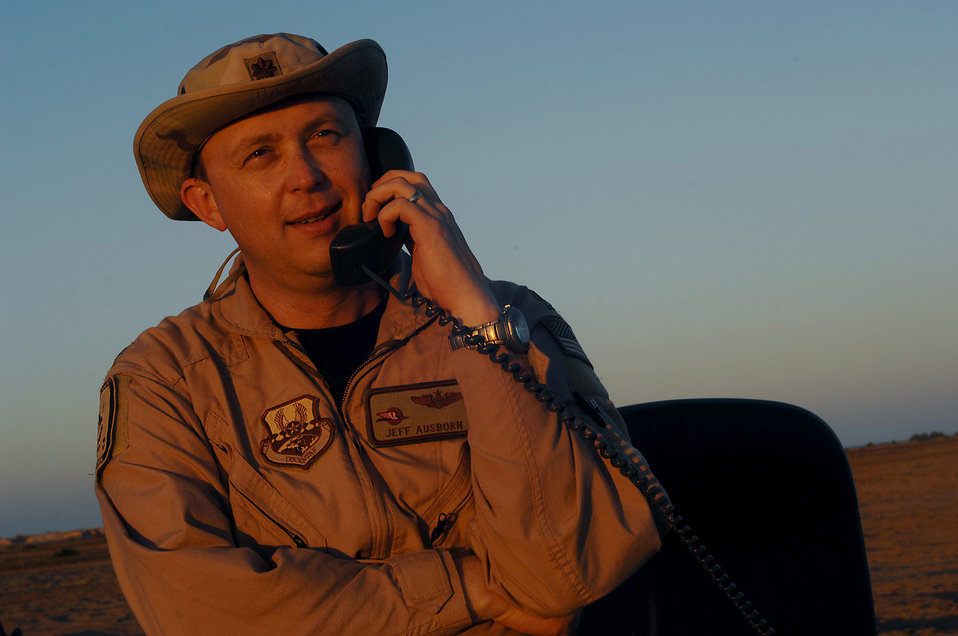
Air Component Coordinator

Maj. Jeff Ausborn might as well move his office outside next to the flightline. It might make his job of coordinating and tracking air support a bit easier.